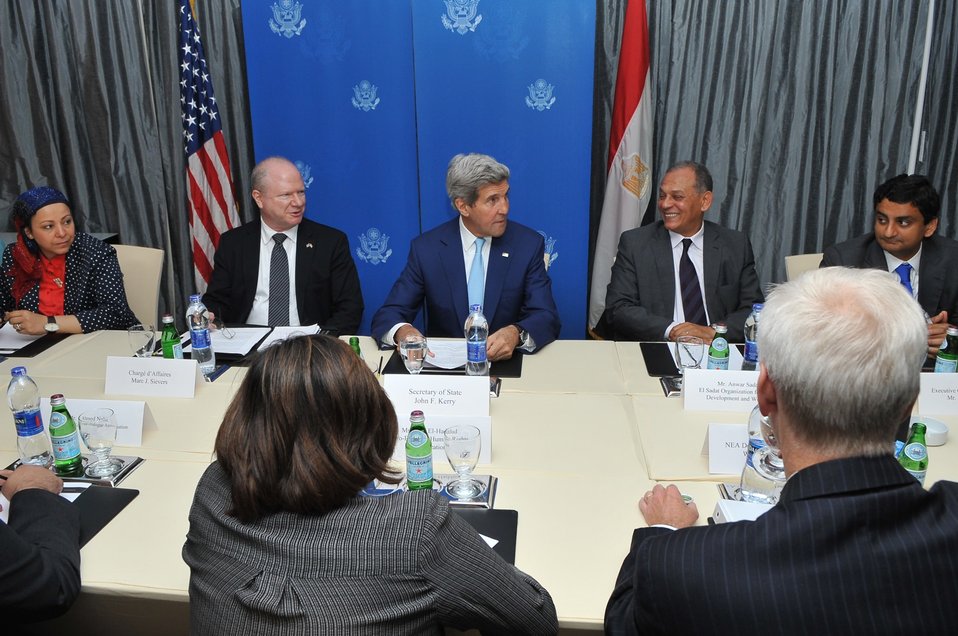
Secretary Kerry Meets With Egyptian Civil Society

U.S. Secretary of State John Kerry meets with members of Egyptian civil society, including the nephew of former President Anwar Sadat, before a meeting with newly installed President Abdel Fattah Al-Sisi in Cairo on June 22, 2014.